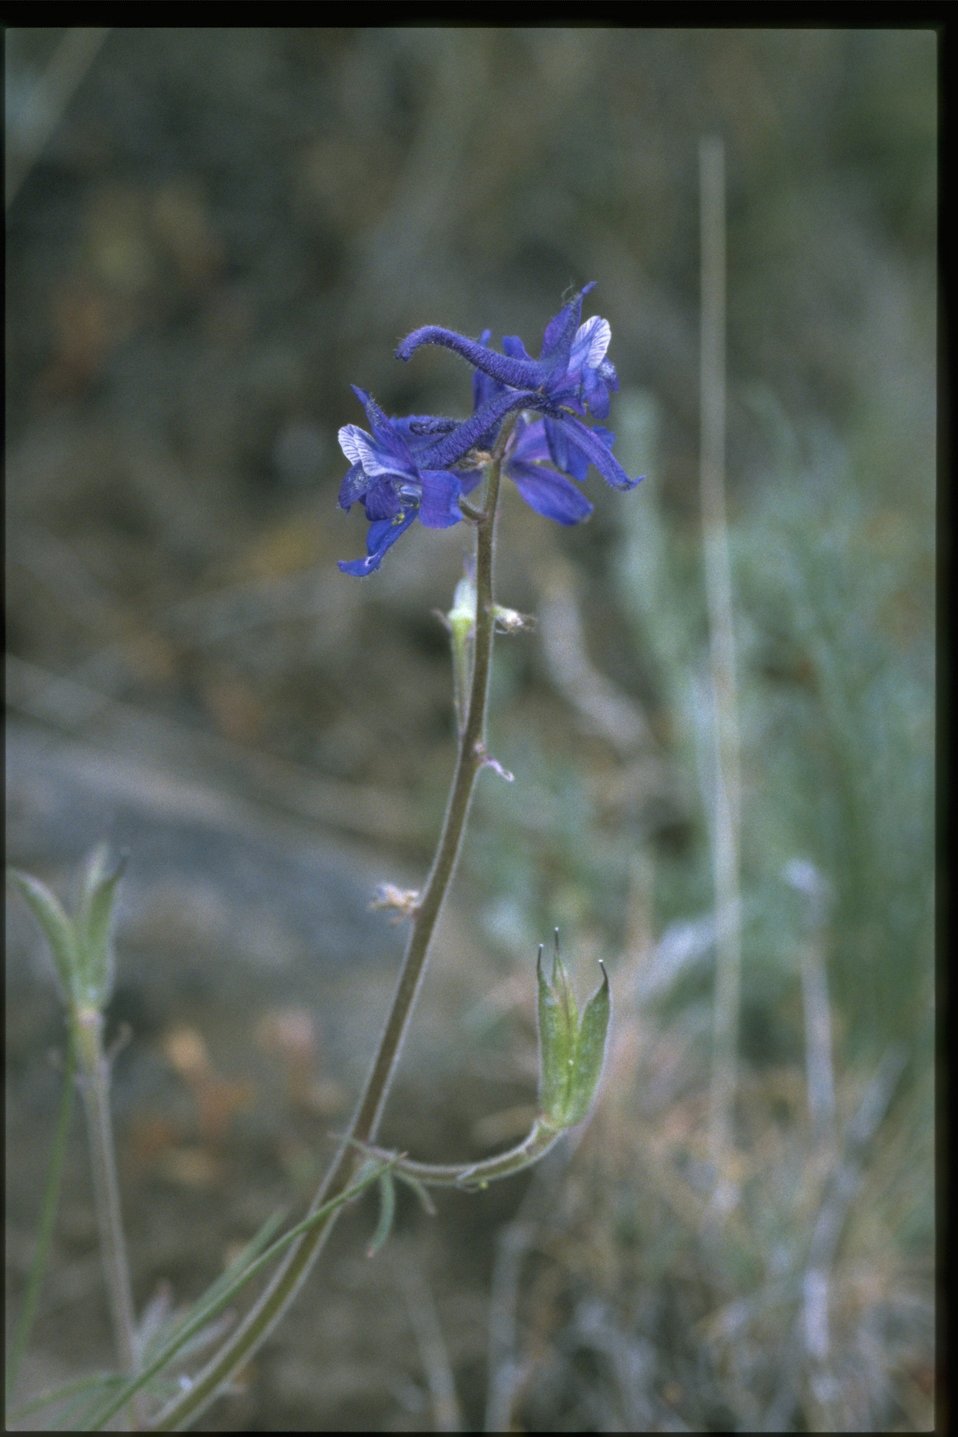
Medium shot of upland larkspur (Delphinium nuttallianum).